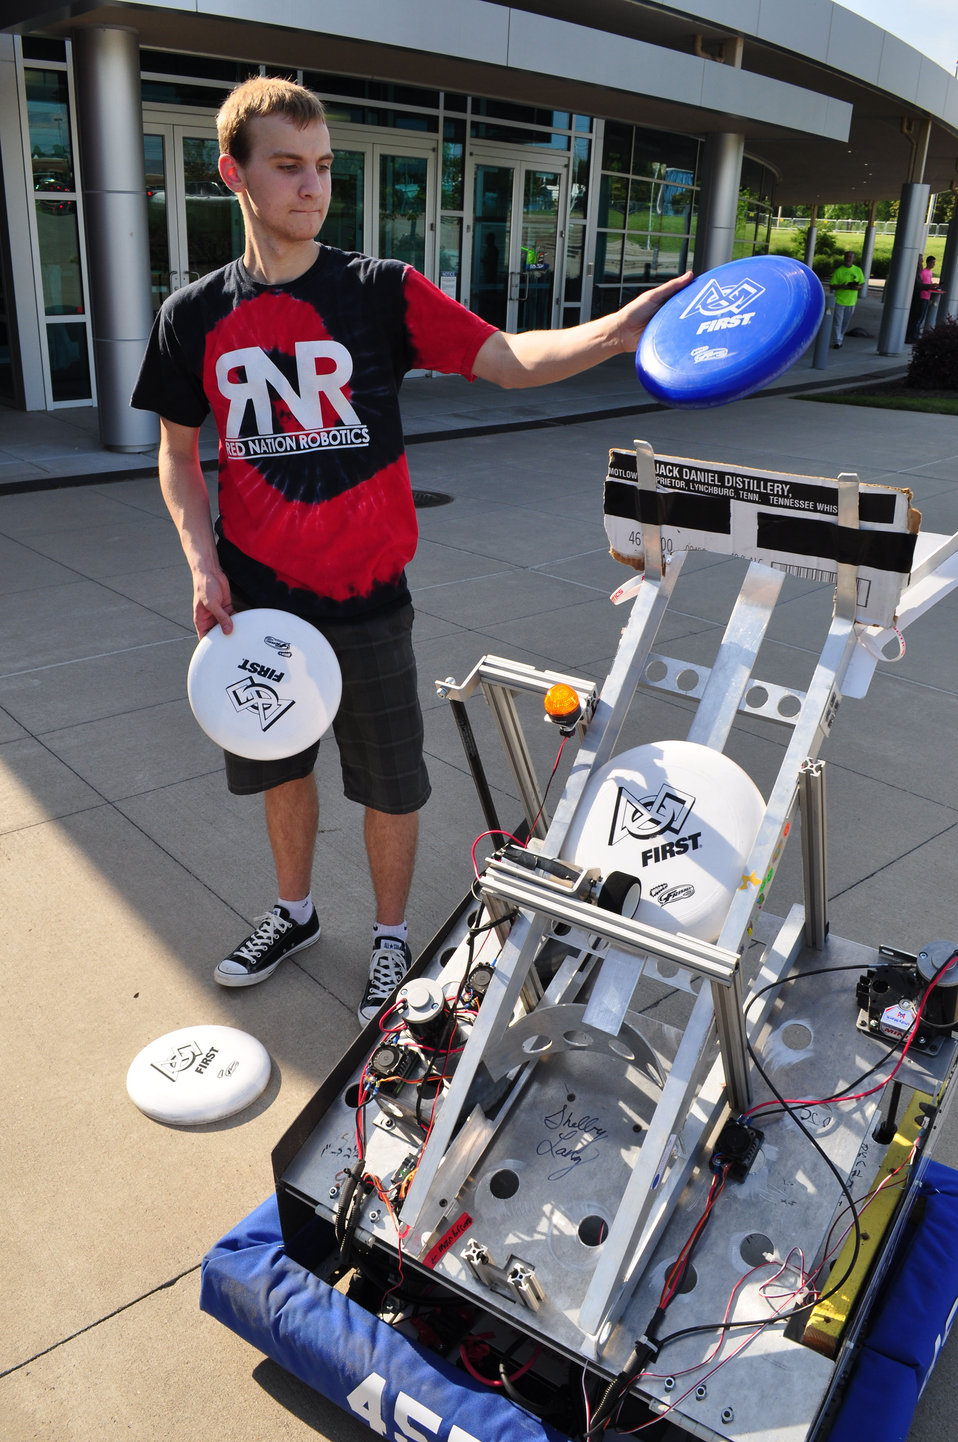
Tennessee Valley Corridor 2013 Oak Ridge

13-062 DOE photo Lynn Freeny 5-29-2013 Oak Ridge Tennessee